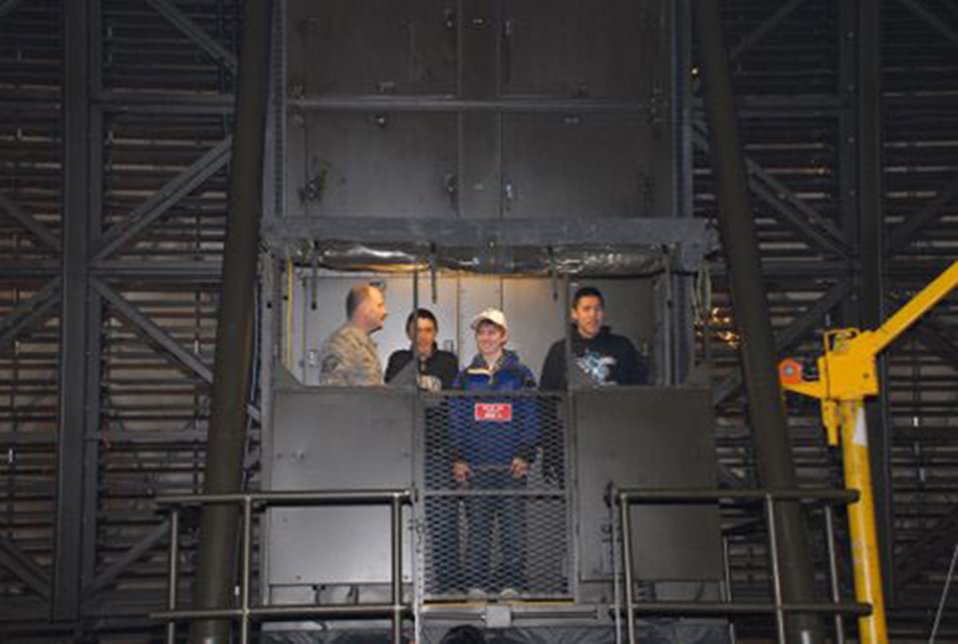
Inside the dome: Barter Island radar site opens its doors

Master Sgt. Rob Gingery, superintendent of the Alaska Radar System, shows visiting Kaktovik children around the interior of the massive dome of the Barter Island radar site.